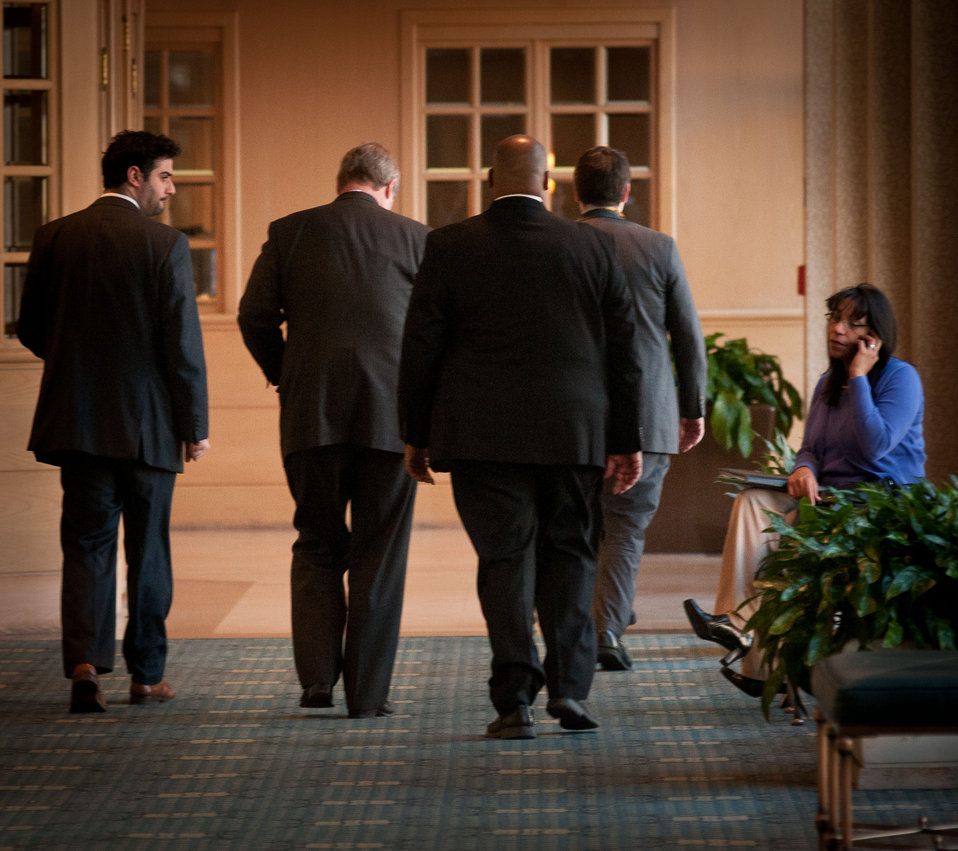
Agriculture Secretary Tom Vilsack (second from left) departs from the National Congress of American Indians Tribal Nations Legislative Summit at L’Enfant Plaza Hotel in Washington, D.C., on Wednesday March 7, 2012.